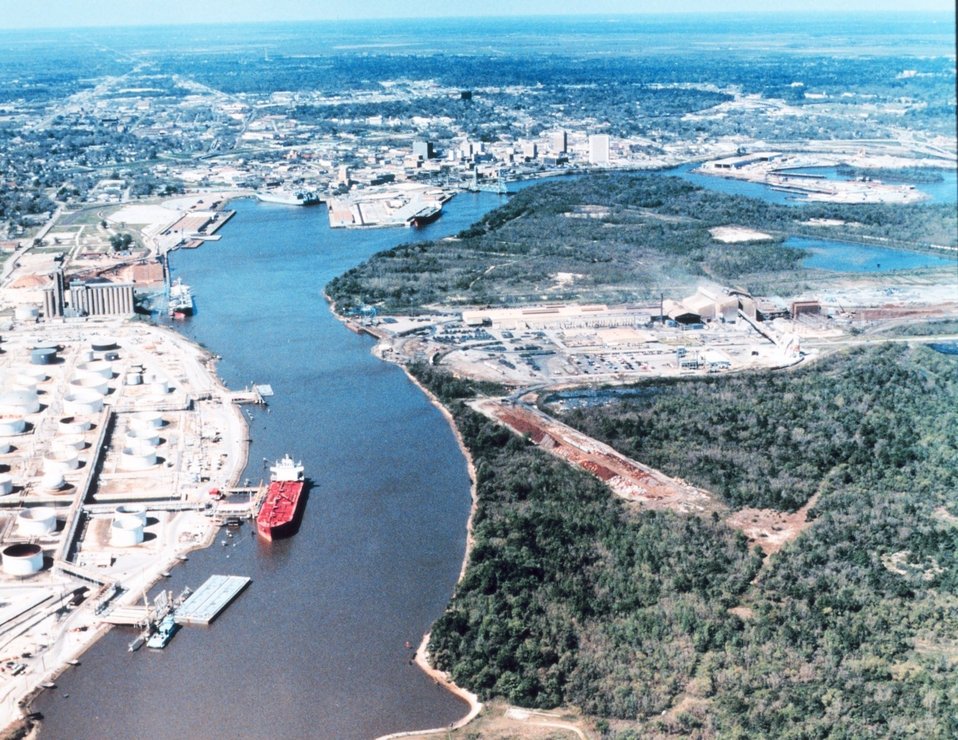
3005 North Latitude 9406 West Longitude.